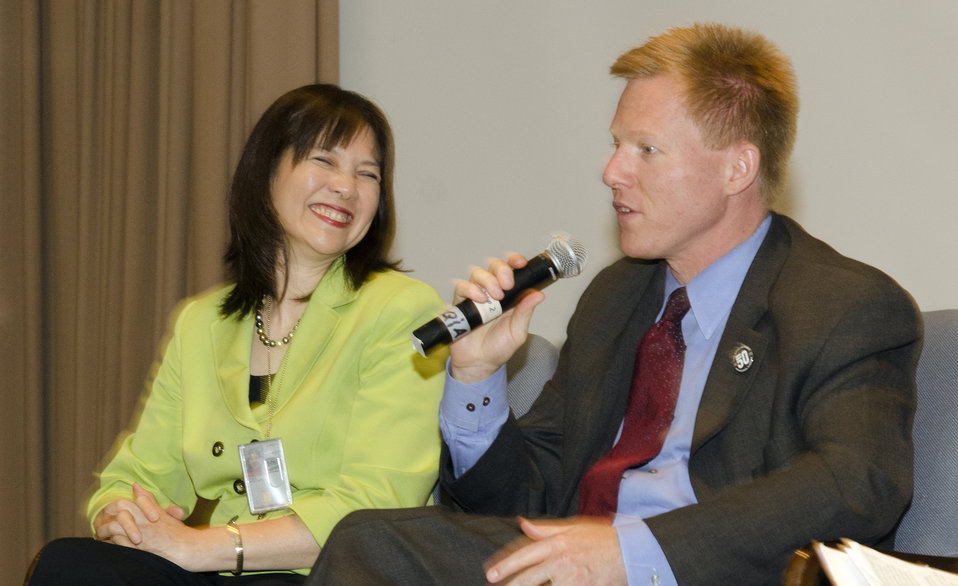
U.S. Department of Agriculture (USDA) Inspector General Phyllis Fong reacts to a comment made by USDA StrikeForce Director Max Finberg at the Womens Equality Day ceremonies held in the Jefferson Auditorium at USDA in Washington, D.C. on Thursday, Aug. 22, 2013.